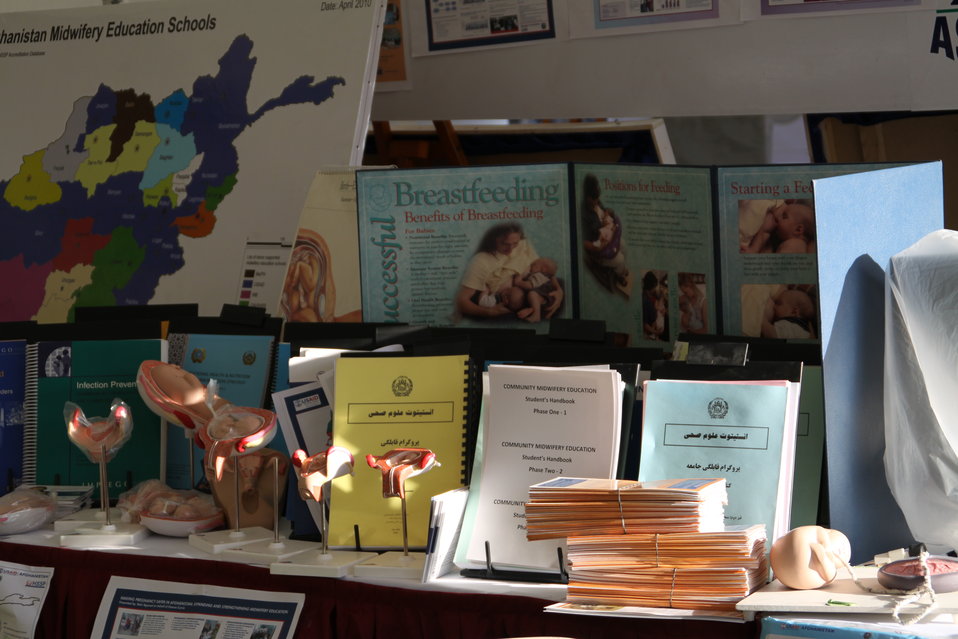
Official July 4th Event Preparation